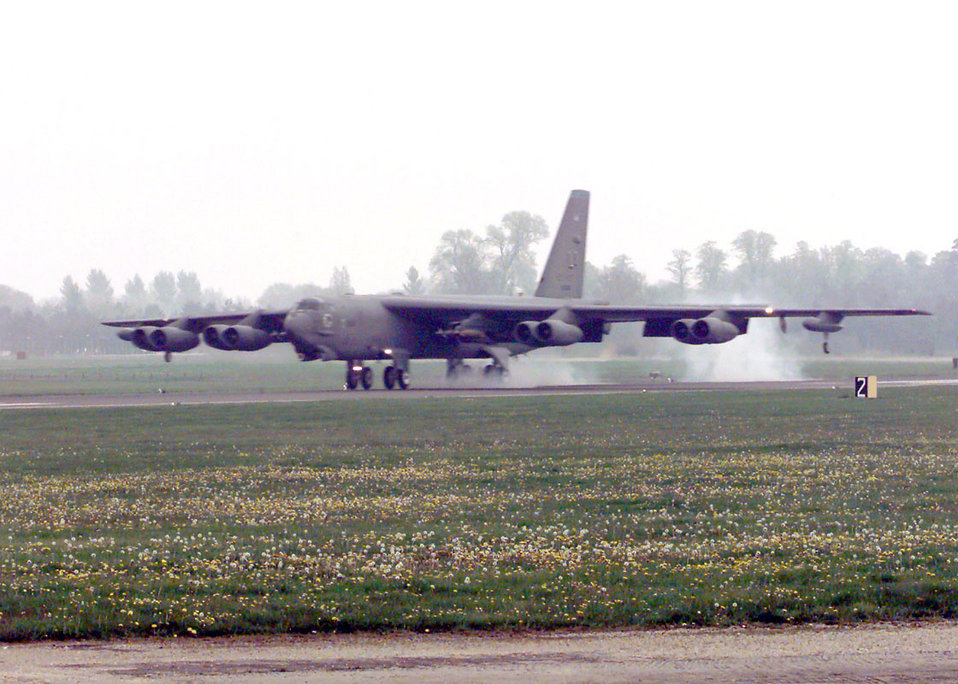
Buff touch down

ROYAL AIR FORCE FAIRFORD, England -- A B-52H Stratofortress touches down here. The Sratofortress is deployed to England as part of the 2nd Air Expeditionary Group supporting NATO Operation Allied Force.